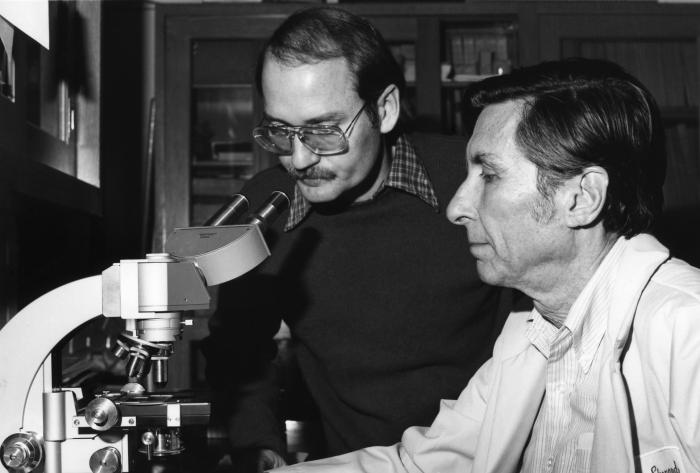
This 1977 image showed Centers for Disease Control's Joseph E. McDade, Ph.D. (left), and Charles C. Shepard, M.D. (right), working with a microscope in CDC's Leprosy and Rickettsia labs.